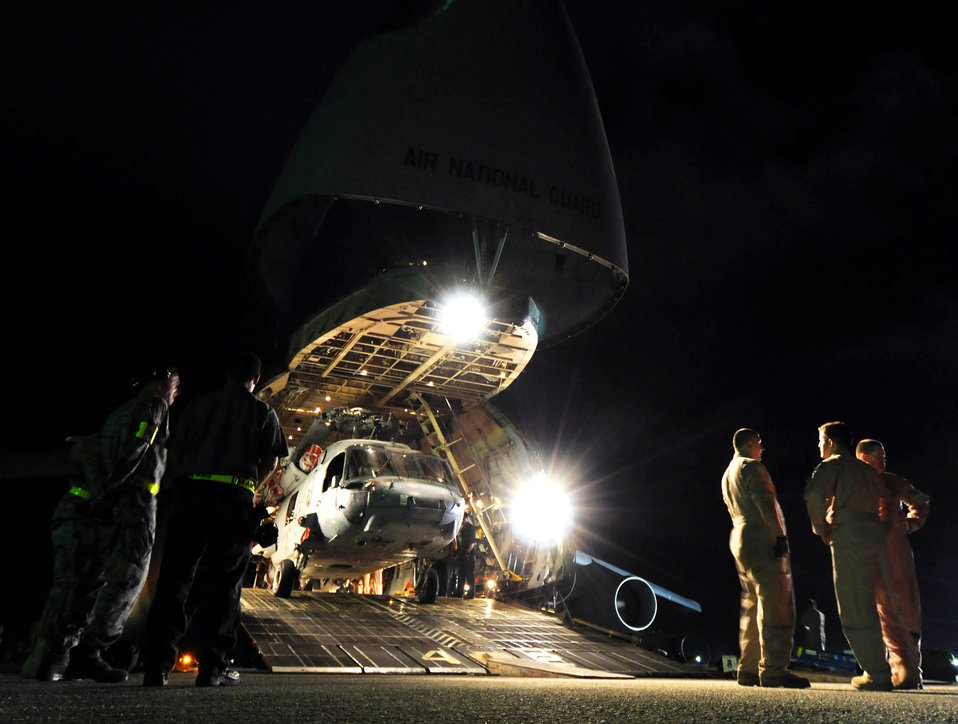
Just the right fit

The aircrew of a C-5 Galaxy from the West Virginia Air National Guard's 167th Airlift Wing, discuss the complexities of loading five helicopters into their aircraft March 13 on the flightline at Andersen Air Force Base, Guam. Three MH-60S Knighthawks and two SH-60H Sea Hawks were being transported to Naval Air Station North Island in San Diego.